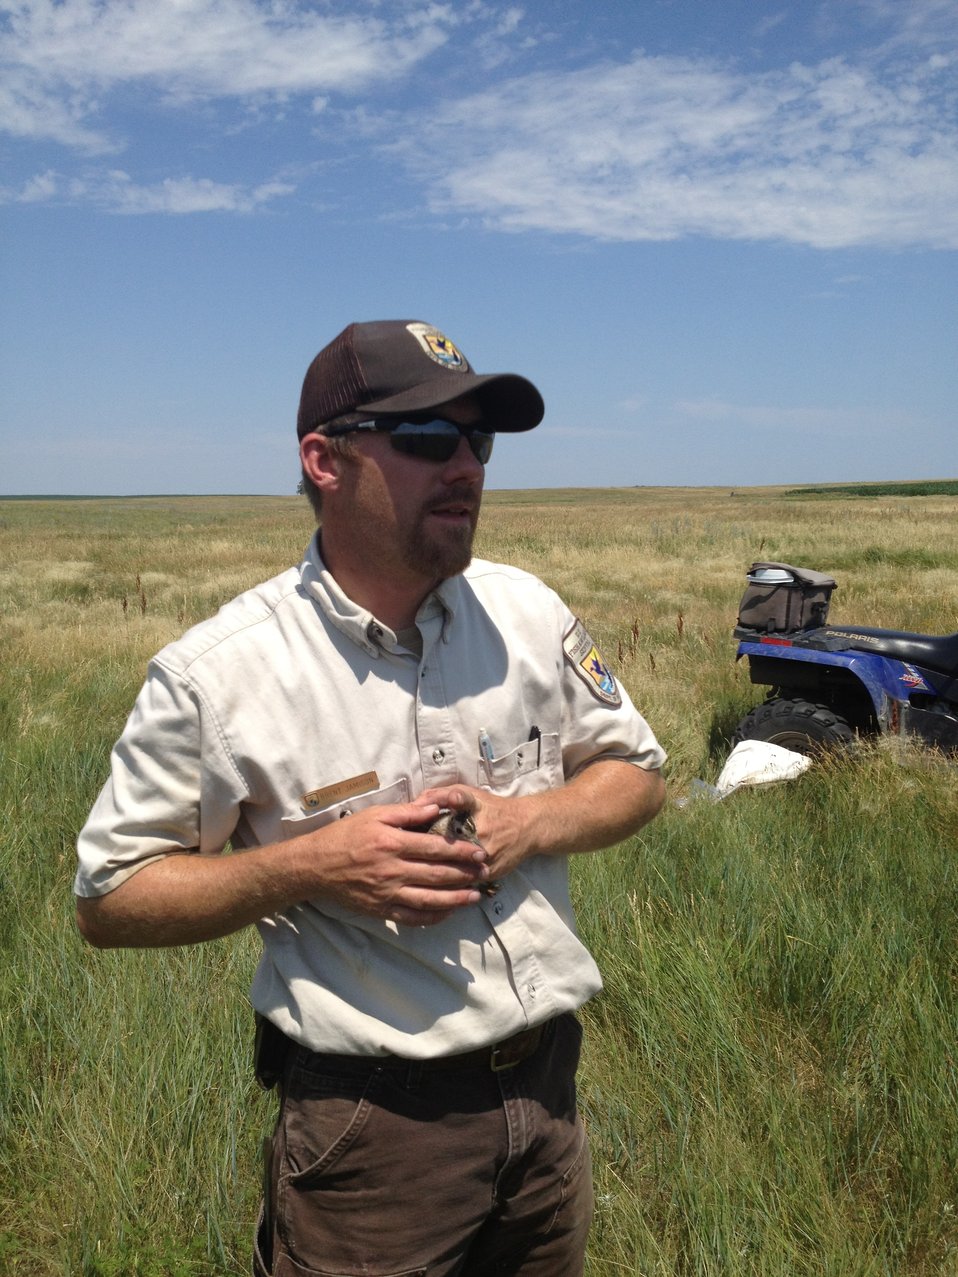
WPA WILDLIFE

Baby Upland Sandpiper